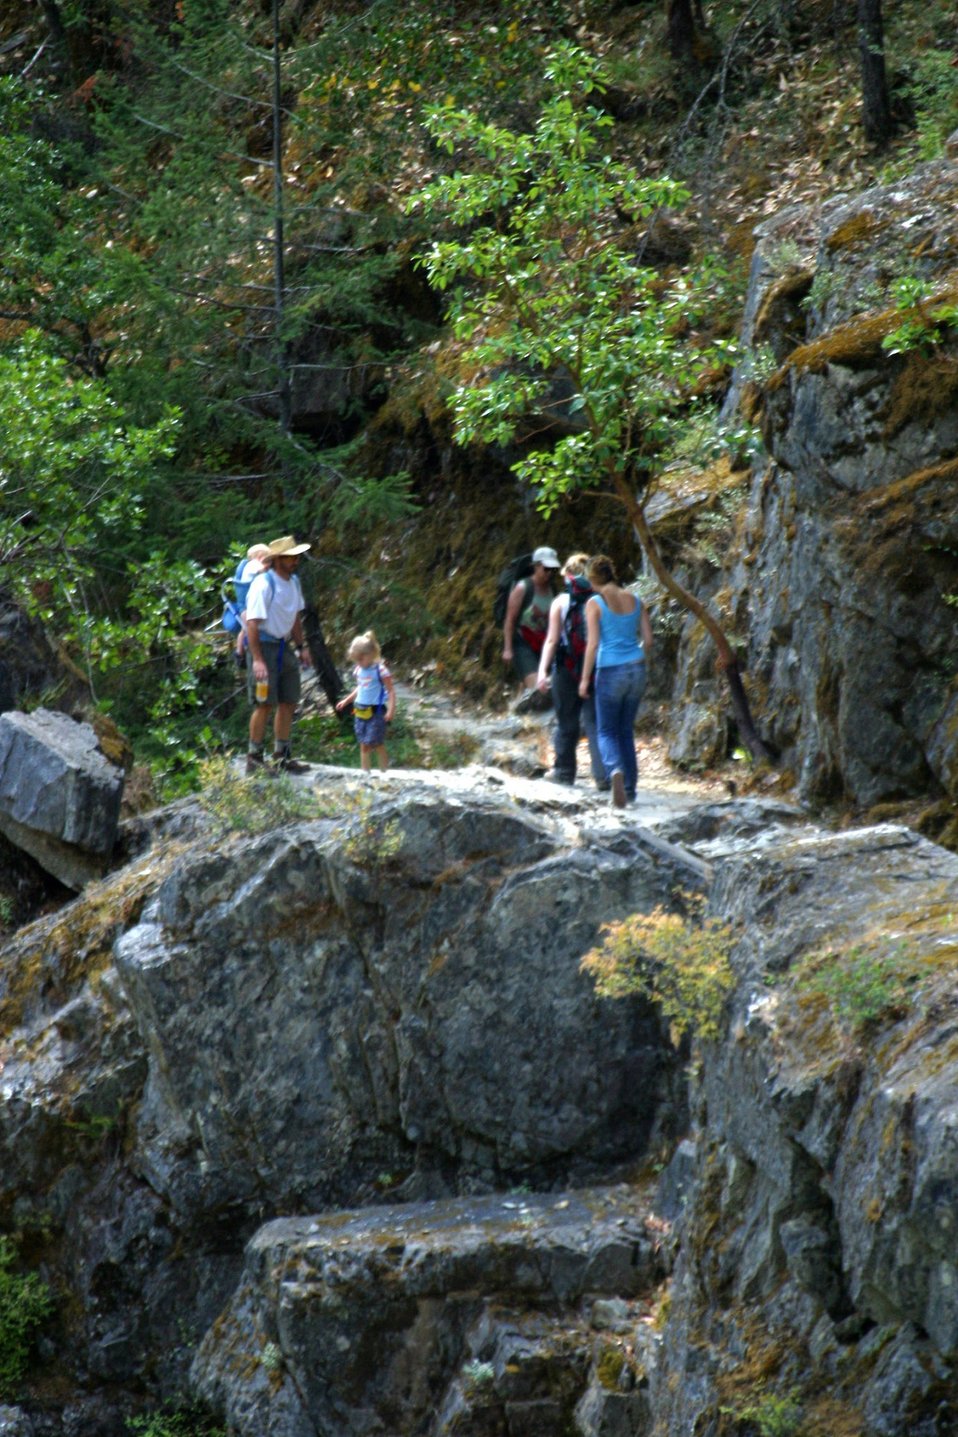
Hiking Rainie Trail between Grave Creek and Rainie Falls.